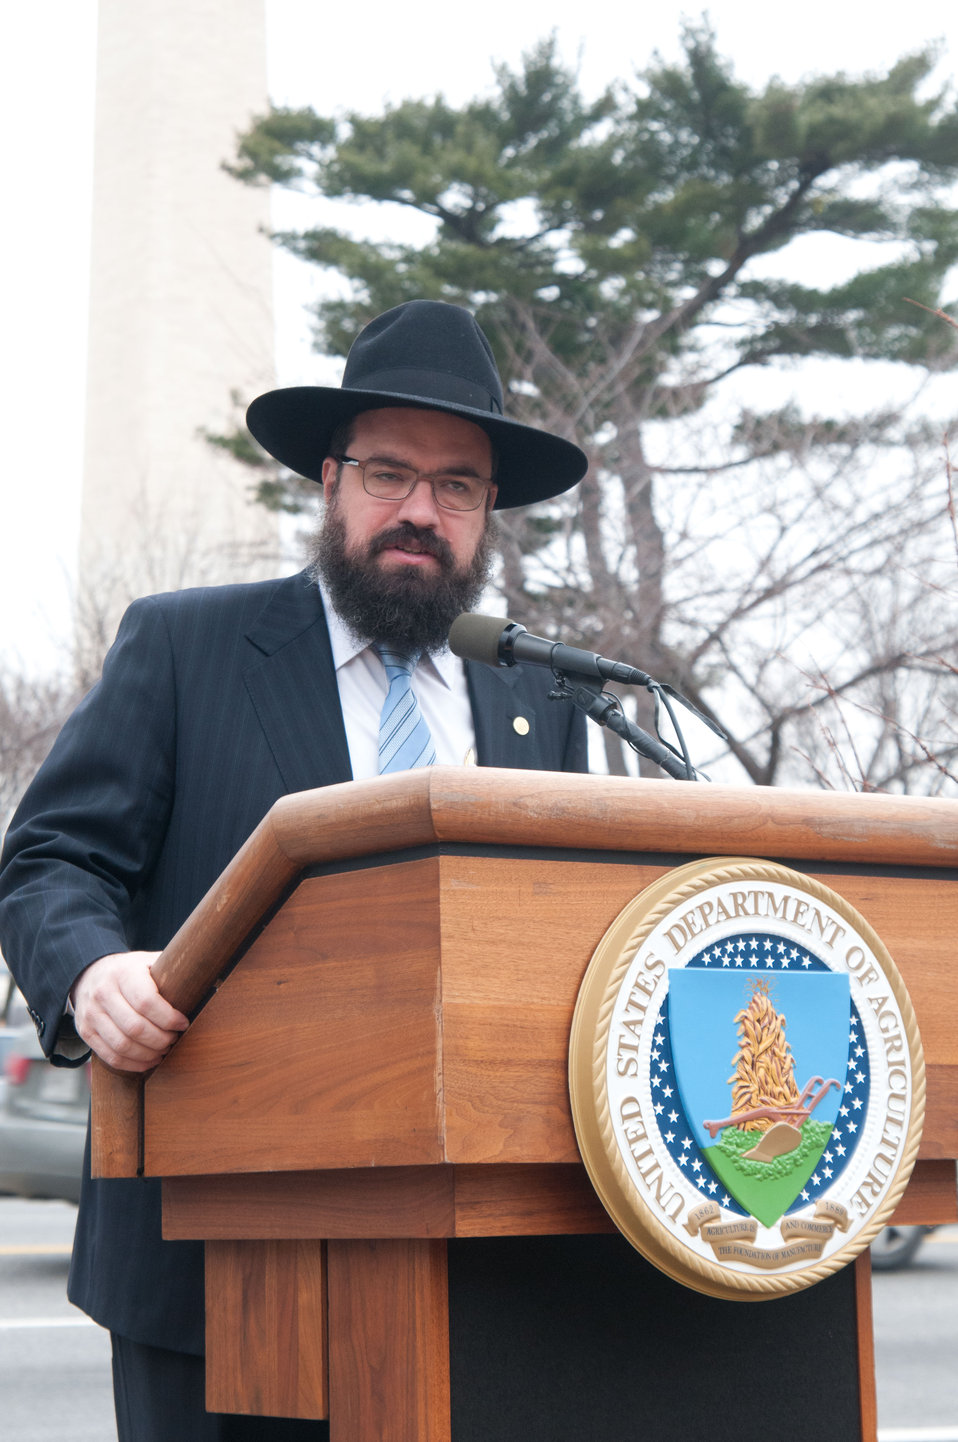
Director of American Friends of Lubavitch Rabbi Levi Shemtov, offered a prayer and talked about the meaning of Tu B’Shevat “The New Year of the Trees,” during the celebration, at the District of Columbia western lawn next to the USDA Headquarters, Whitten Building at 14th Street and Independence Ave SW, Washington, D.C. on Wednesday, February 8, 2012. Rabbi said, “It is the first day where we mark the rainfall coming to a close and vegetable life starting to begin drawing sustenance from the ground.” One of the customs is to partake of the seven types of grains and fruits listed in the Torah (i.e. wheat, barley, figs, pomegranates, olive, and dates). Later, the audience was able to eat some of these and other offerings.